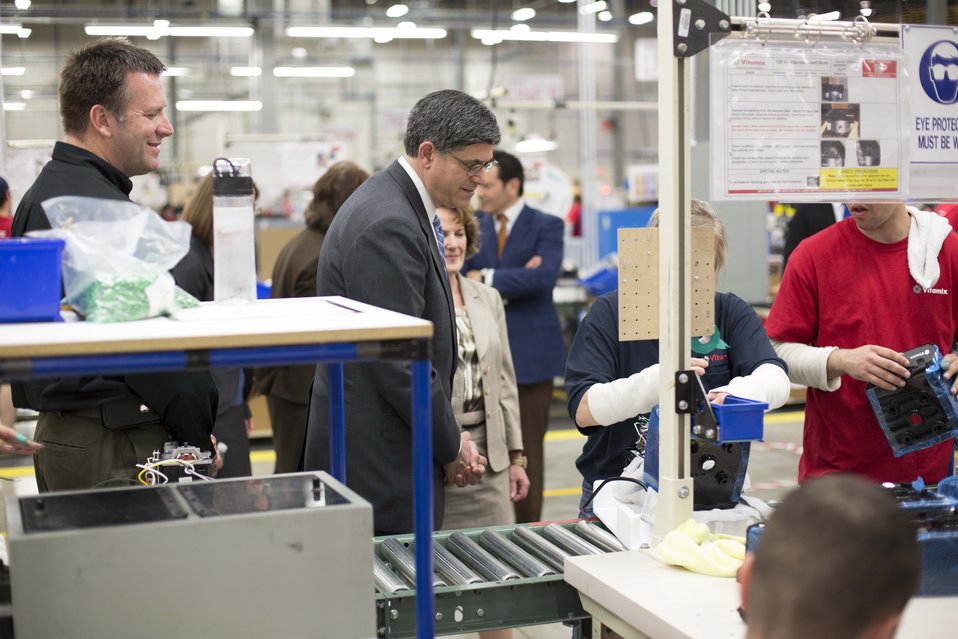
Secretary Lew tours Vitamix manufacturing facility during trip to Cleveland, Ohio

May 7, 2013 — Secretary Lew observes Vitamix Team Leader Jody Birchfield wiring a motor to a control board.